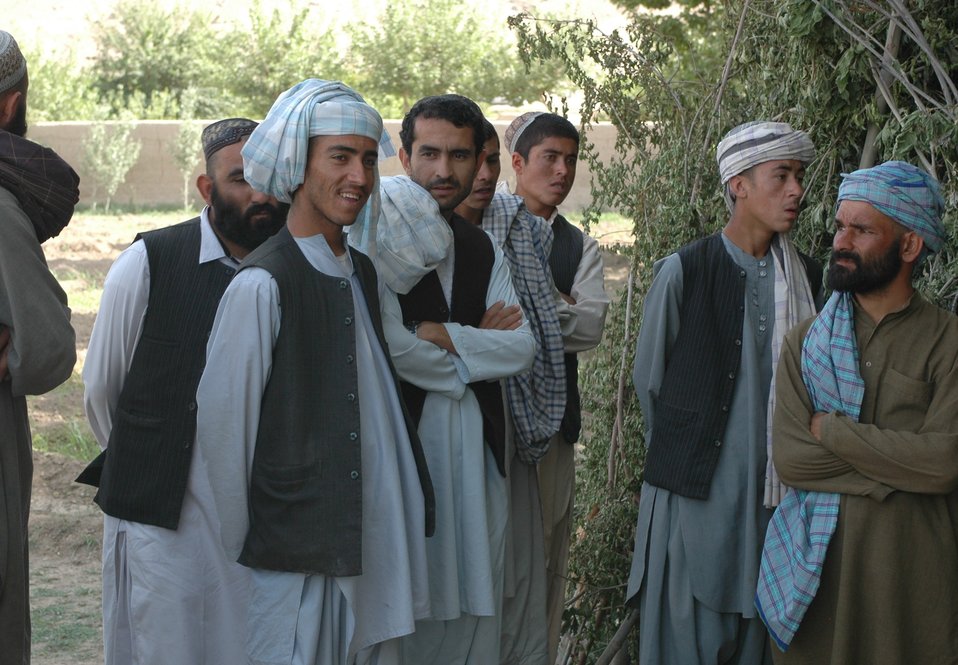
Dr Shah Visits Argandab April 10, 2010